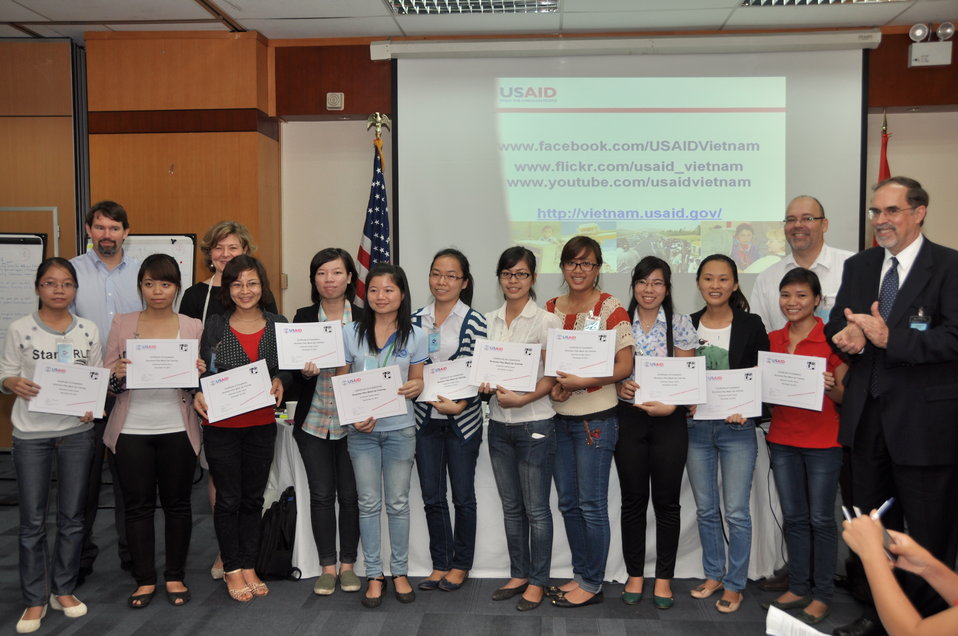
Vietnamese university students join the Business Plan Mashup exercise

Photo: @USAIDVietnam, November 16, 2012